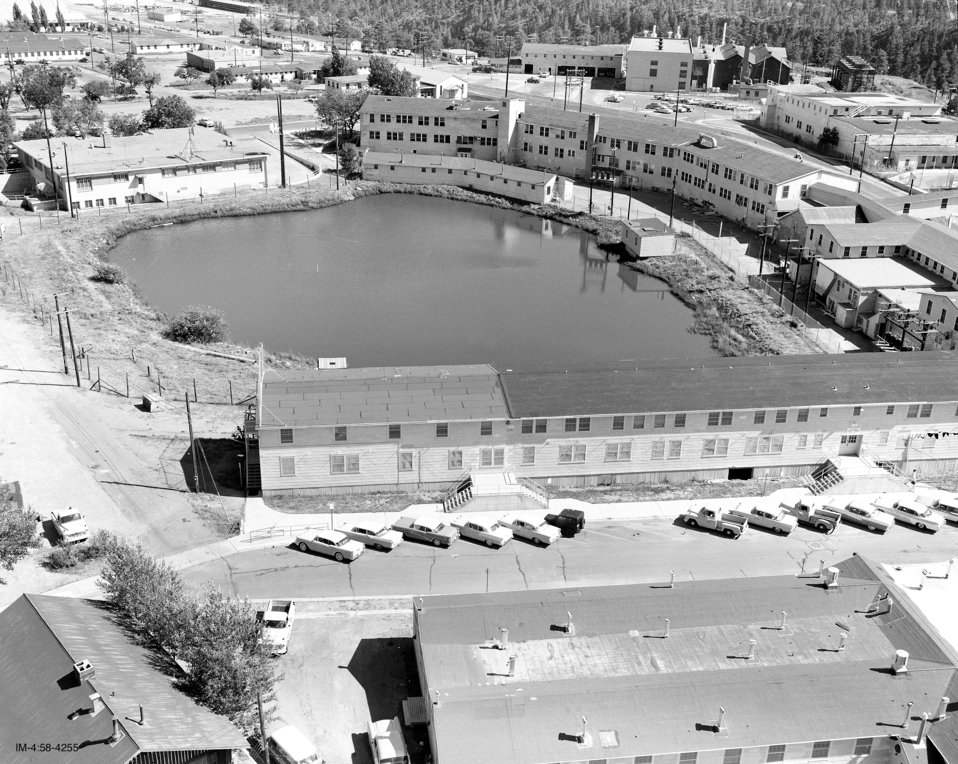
MAIN TECHNICAL AREA